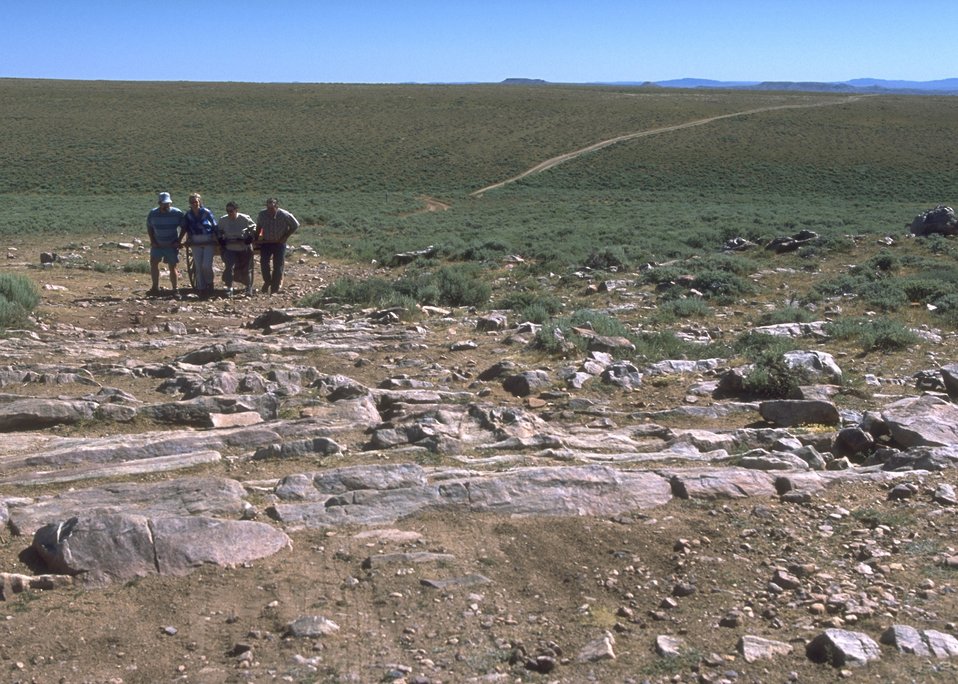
Hand cart re-enactment along the Mormon Trail, Lander Field Office.